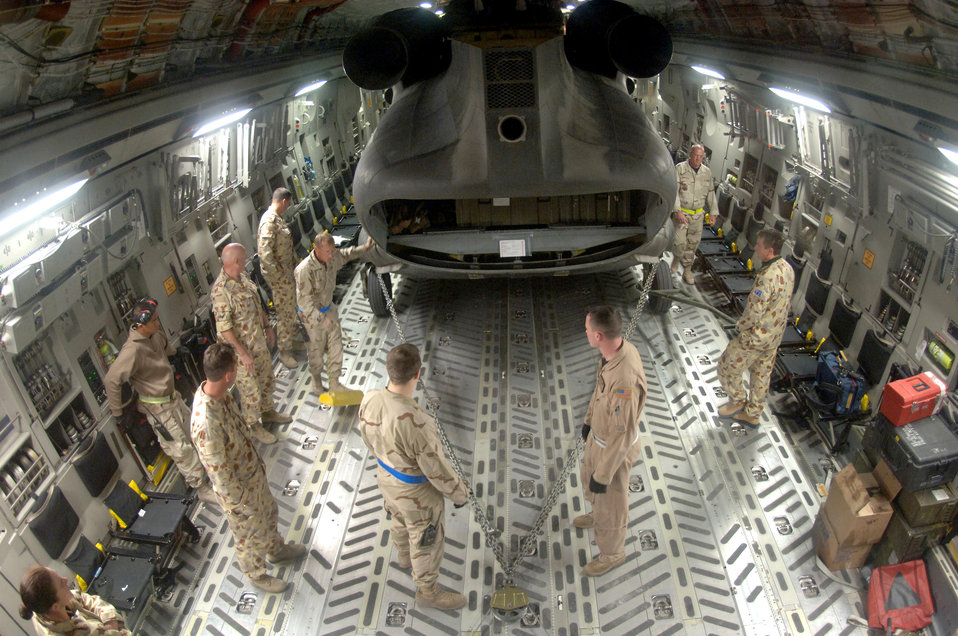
C-17 cargo load

Crewmembers from the 817th Expeditionary Airlift Squadron and their Australian forces counterparts upload an Australian Army CH-47 helicopter onto a C-17 Globemaster III at a deployed location in Southwest Asia on Sunday, Mar. 12, 2006. The C-17 is from McChord Air Force Base, Wash.